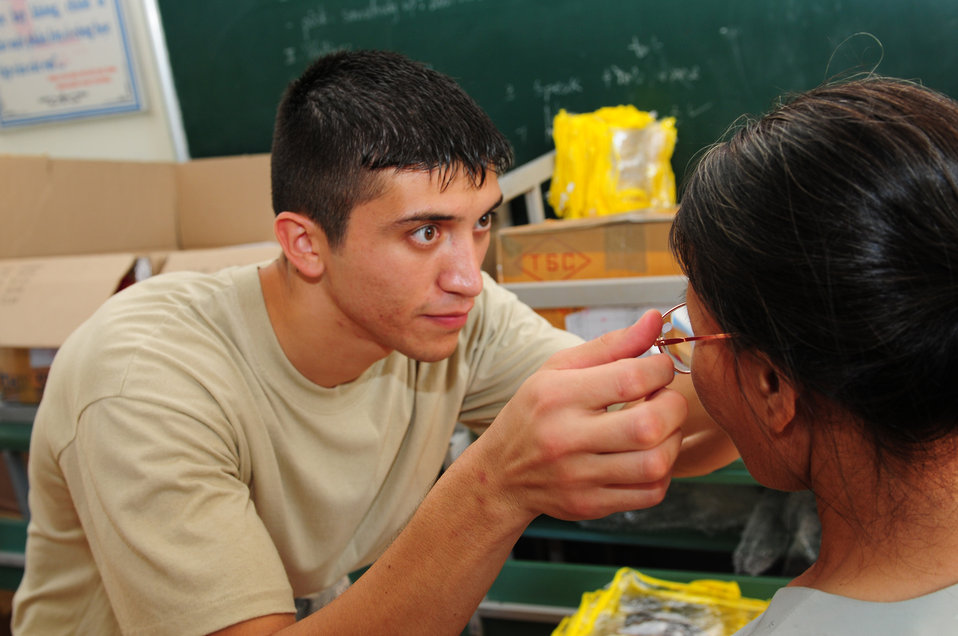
Pacific Angel optometry team provides vision in Vietnam

Staff Sgt. Marvin Gutierrez sizes eyeglasses prescribed to a Vietnamese girl from Quang Tri Province, Vietnam, Sept. 18, 2009. Sergeant Gutierrez and other Air Force members are participating in Operation Pacific Angel 2009 Sept. 15 through 24 to provide humanitarian assistance in cooperation with local authorities to Quang Tri Province residents. Sergeant Gutierrez is an optometry technician participating in Operation Pacific Angel 2009.